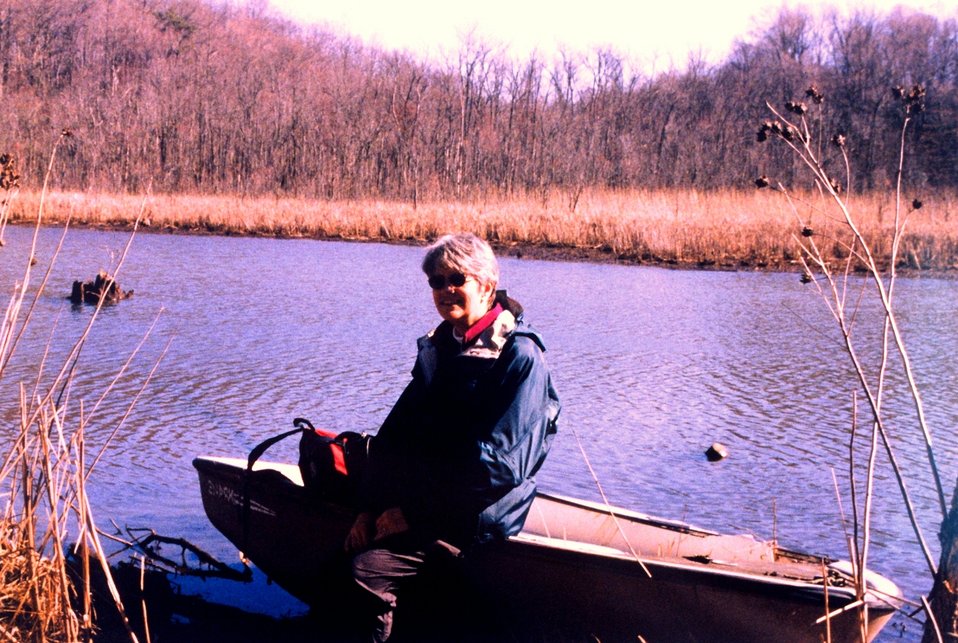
Mary Hollinger at Parkers Creek, off Chesapeake Bay, in the American Chestnut Land Trust Area.